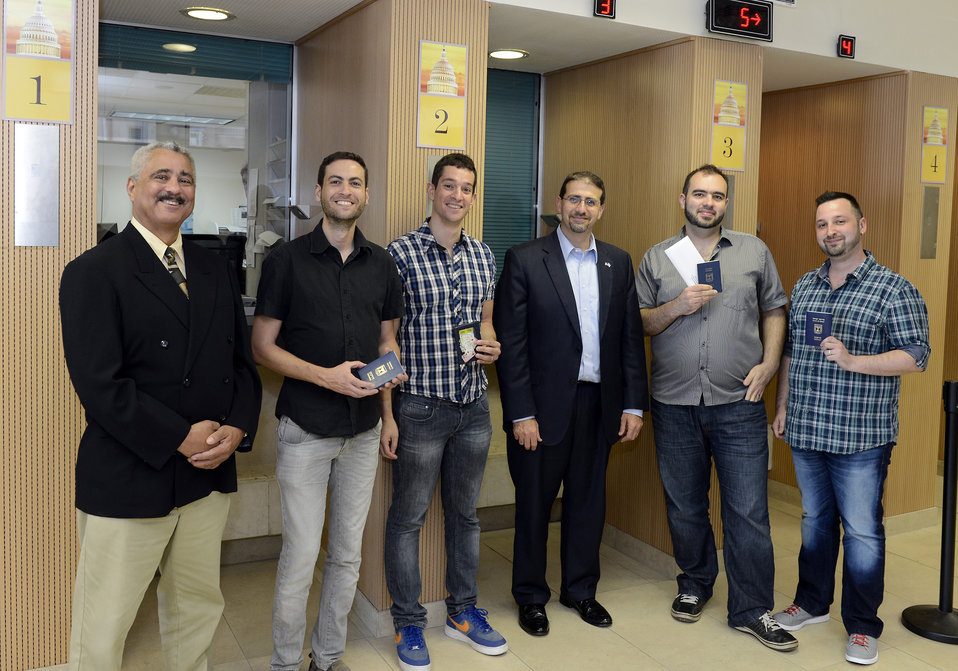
Ambassador Shapiro and Consul General Mire Present Embassy Tel Aviv's First Visas for Same-Sex Partners

Taking advantage of new rules allowing married same-sex partners to receive federal benefits put in place after the U.S. Supreme Court decision striking down the Defense of Marriage Act (DOMA), the U.S. Embassy in Tel Aviv, Israel, issues its first-ever derivative visas to the same-sex spouses of two Israelis relocating to the United States on work visas. U.S. Ambassador to Israel Dan Shapiro and Consul General Lawrence Mire present the approved visas to Sergey Shepshelevich and Alexander Polyakov. as well as Elad Ben Yosef and Idan Frumin, at the Embassy’s visa section on August 8, 2013.